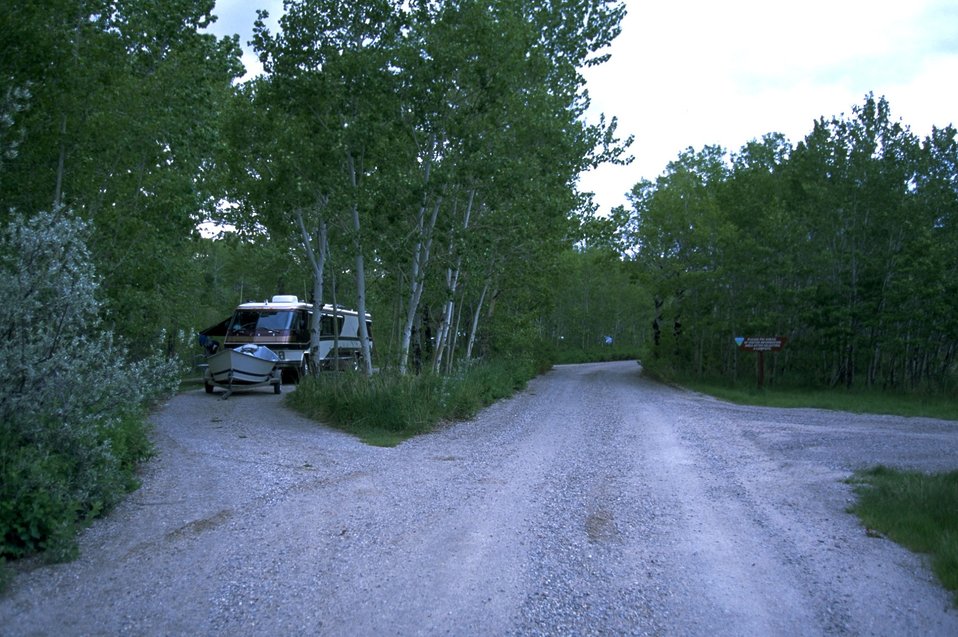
Large recreational vehicle (RV) and boat at Divide Campground